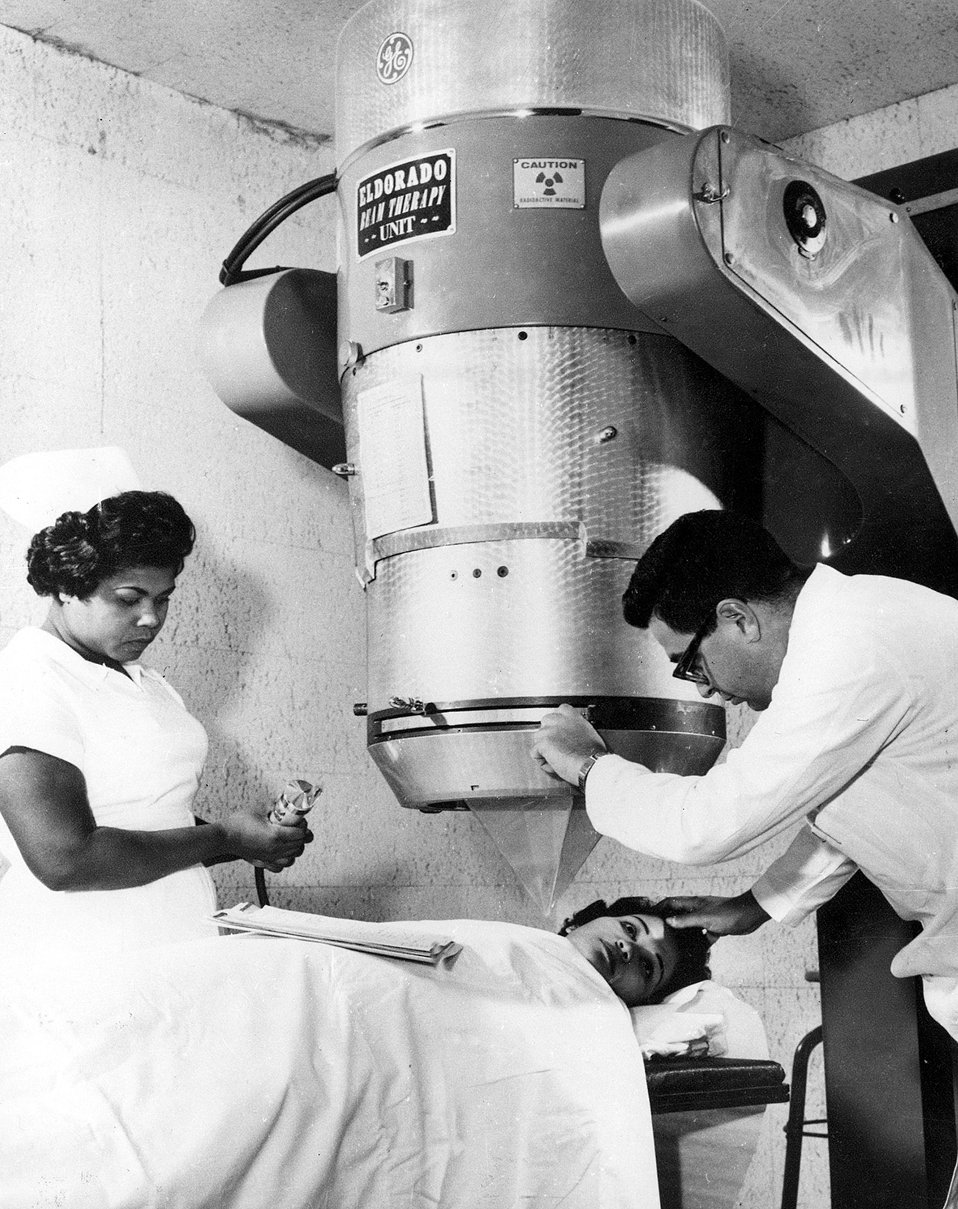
Technicians at the Atomic Energy Commission's Puerto Rico Nuclear Center, San Juan, here prepare a patient for treatment by radiation. Circa 1965.